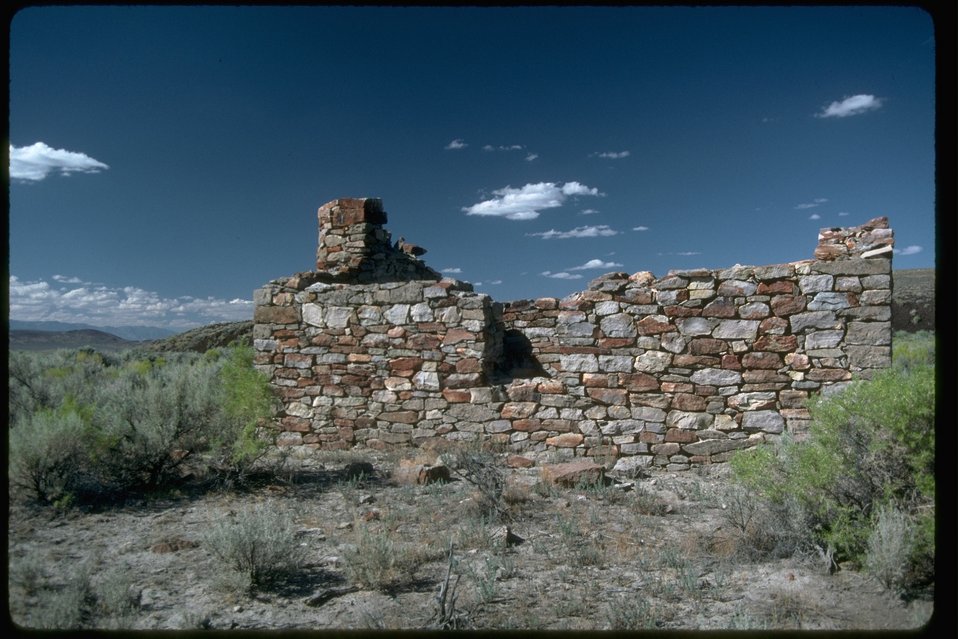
Stone remnants of an old building. OR 3-152